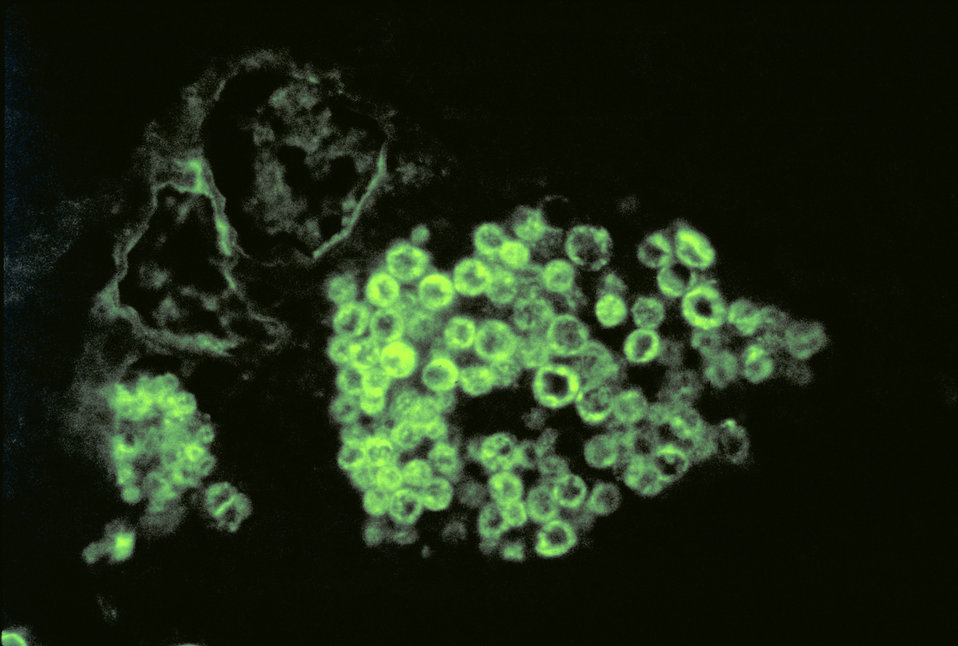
Histopathology of coccidioidomycosis of lung showing spherule with endospores of Coccidioides immitis. FA stain.